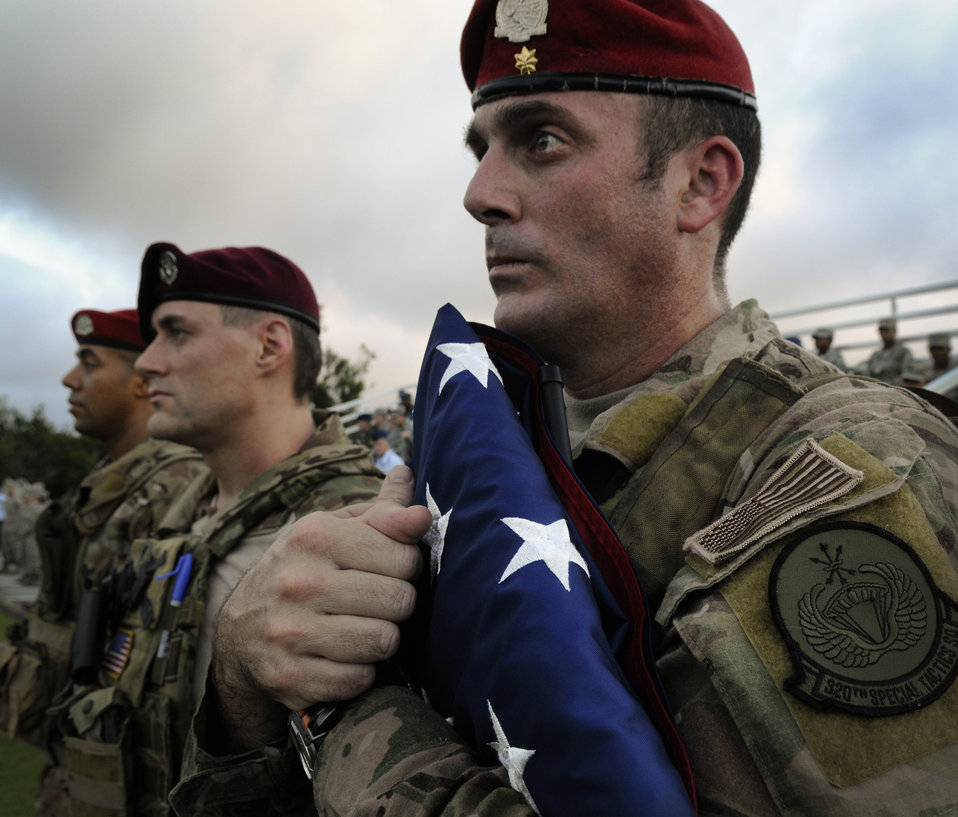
For the fallen

Maj. John Traxler carries the American flag before